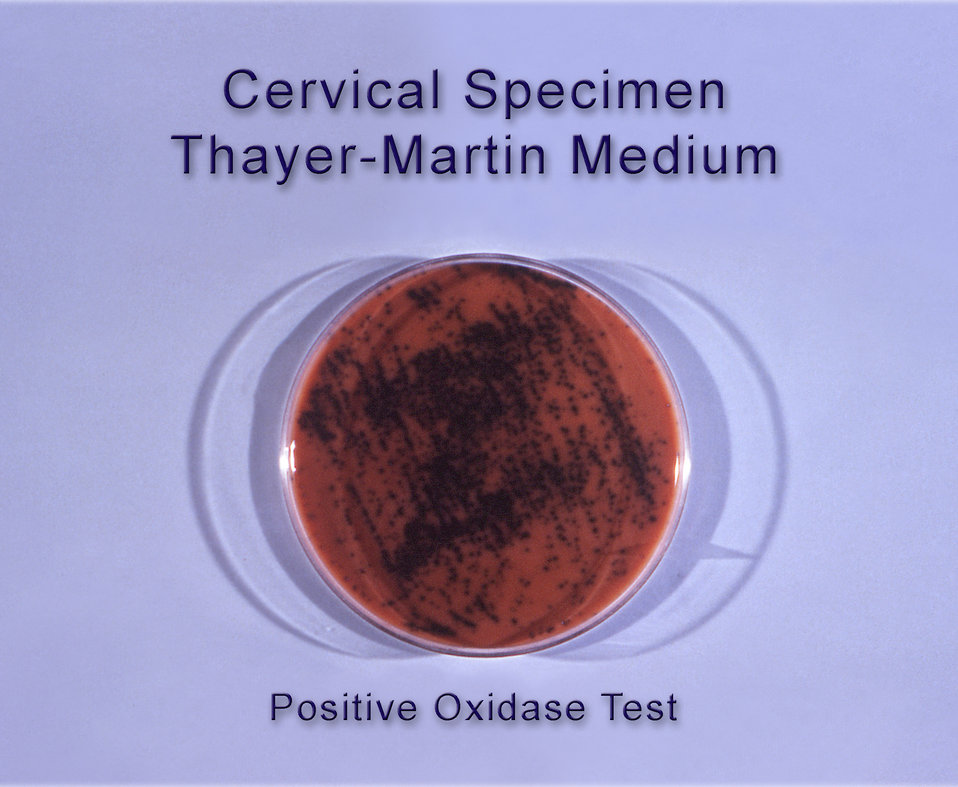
Thayer-Martin medium is used when transporting or isolating N. gonorrhoeae and N. meningitides bacteria.